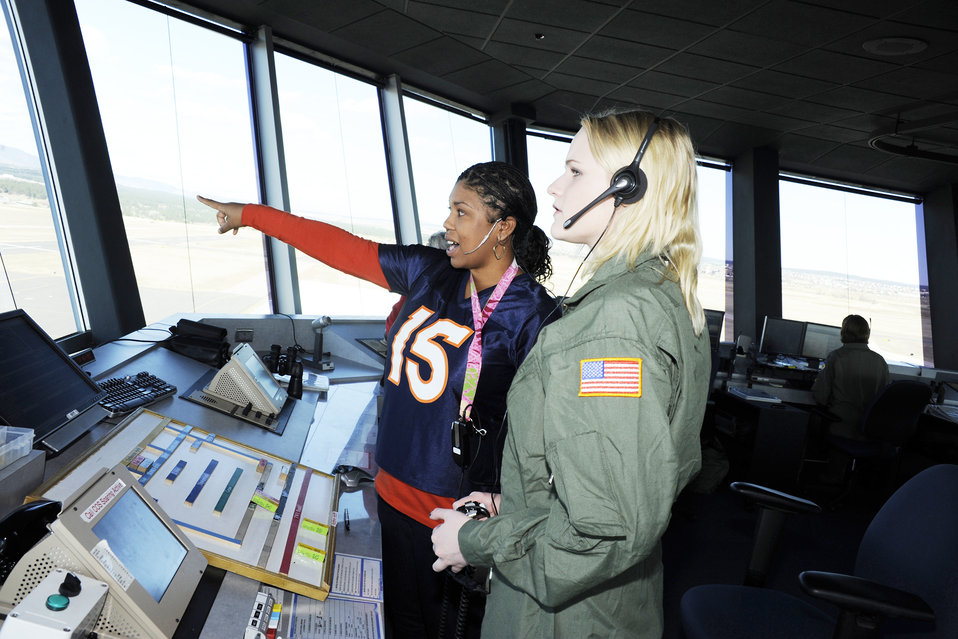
Cadet for a day

Hannah Marklin of Parker, Colo., receives a tour of the U.S. Air Force Academy air traffic control tower Nov. 13, 2009. She was visiting the Academy as